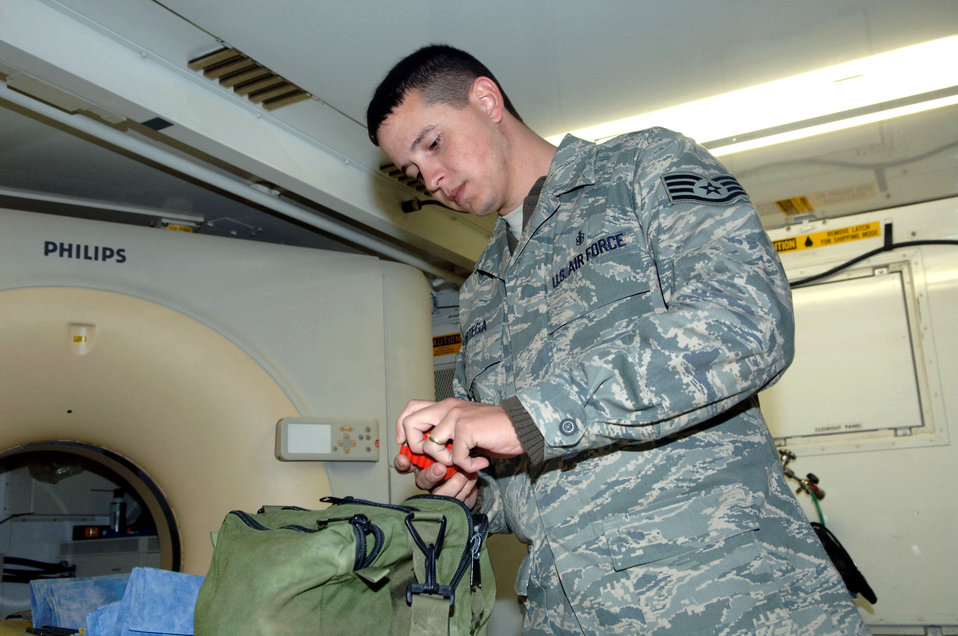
Biomedical maintainers ensure combat medical success

Staff Sgt. Orlando Ortega selects tools before performing maintenance on a CT scanner at the Air Force Theater Hospital Jan. 12 at Balad Air Base, Iraq. The scanner provides doctors a three-dimensional internal image of a patient taken from a series of angles. Sergeant Ortega is a 332nd Expeditionary Medical Support Squadron biomedical equipment technician and deployed from Barksdale Air Force Base, La.